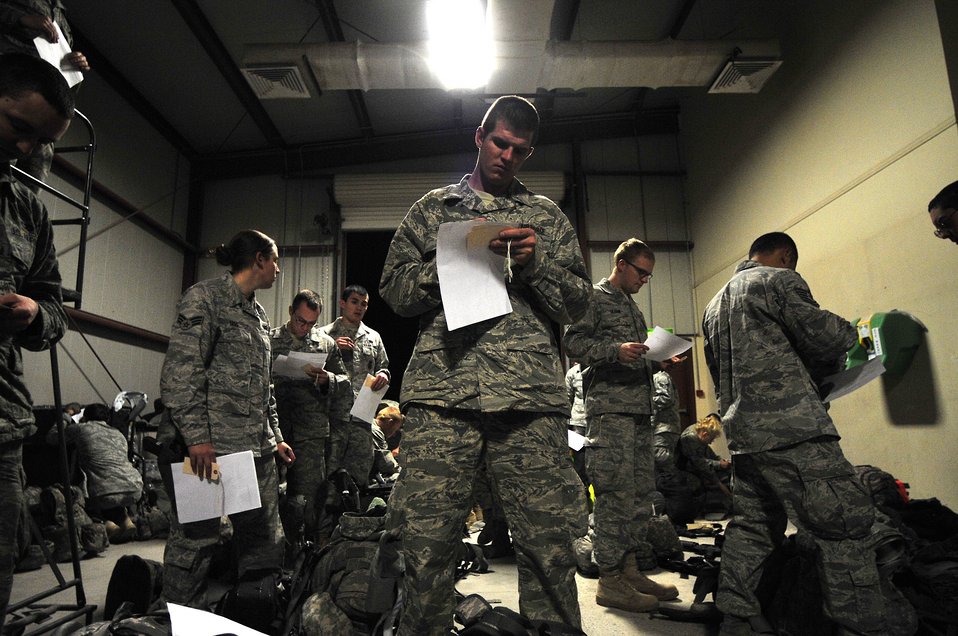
Last airmen flying out of Iraq

Staff Sgt. Michael Braach prepares to turn in his weapon Dec. 18, 2011, at an undisclosed location in Southwest Asia. Braach and his fellow Airmen are the last service members to redeploy from Iraq based on the Iraq and U.S. 2008 Security Agreement that required all U.S. service members to be out of the country by Dec. 31. Braach is a firefighter assigned to the 407th Air Expeditionary Group.